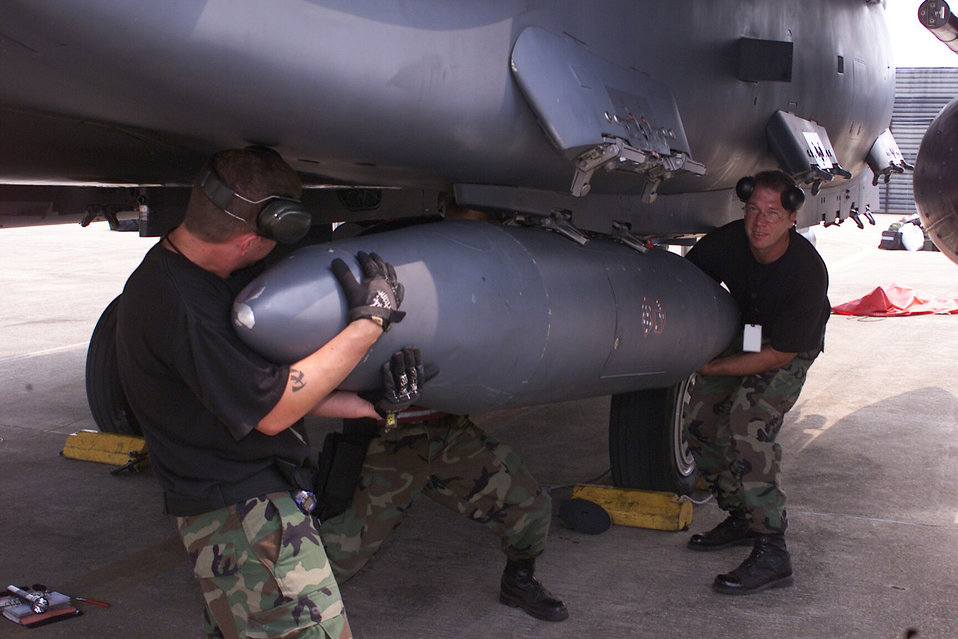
First arrival

GWANGJU AIR BASE, South Korea -- Master Sgt. Jeff Kestner assists in removing the traveling pod from an F-15E Strike Eagle after arriving here Sept. 1. Sergeant Kestner is assigned to the 3rd Air Expeditionary Group.